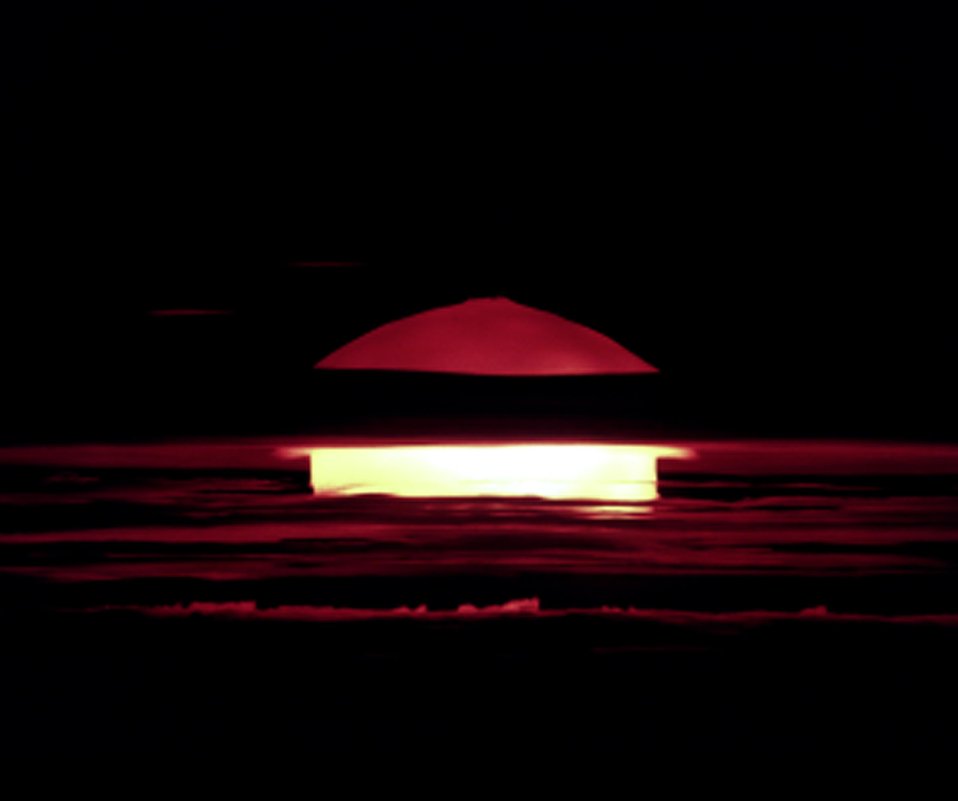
Bikini Atoll